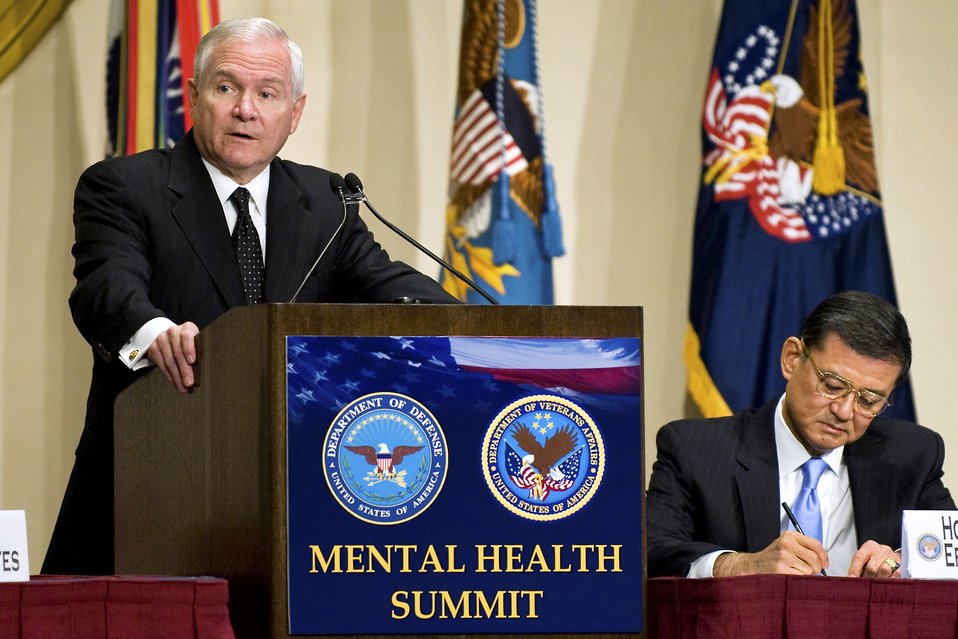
Mental Health Summit

Secretary of Defense Robert M. Gates addresses the audience as Secretary of Veterans Affairs Eric K. Shinseki takes notes, during the DOD/VA Mental Health Summit in Washington, D.C., Oct. 26, 2009. The first-of-its-kind summit featured mental health experts from both departments, other cabinet agencies and non-governmental organizations to discuss a public health model for enhanced mental health care for returning service members, veterans and their families.